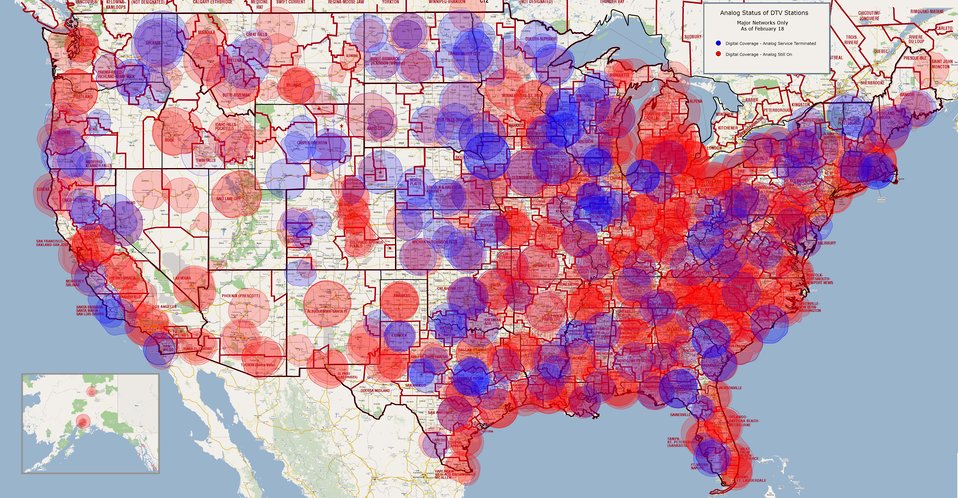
Whole US June 12